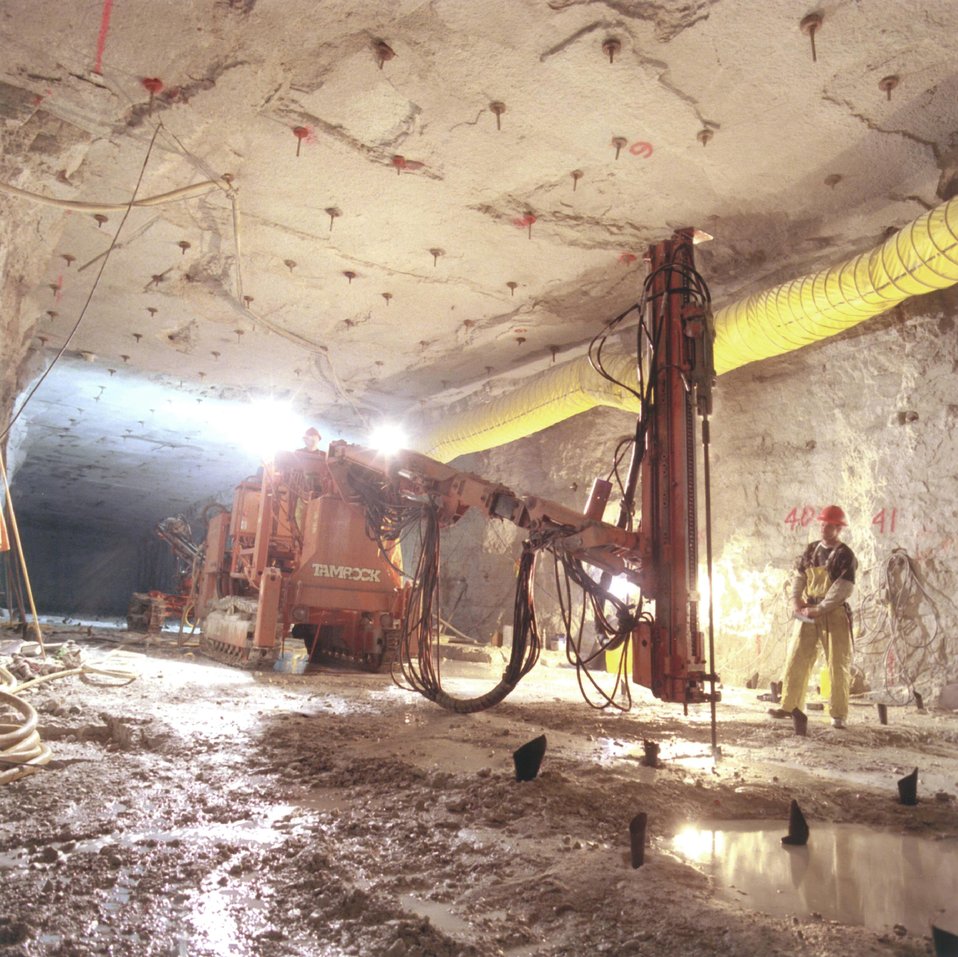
MINERS USE A SPECIAL MACHINE TO DRILL HOLES INTO THE ROCK TO PLACE EXPLOSIVES FOR BLASTING FOR THE NUMI PROJECT, AT FERMI.

SINCE MARCH 2000 AN UNDERGROUND SYSTEMS OF HALLS, SHAFTS AND TUNNELS HAVE BEEN DUG FOR THE NEUTRINOS AT THE MAIN INJECTOR PROJECT. THIS NUMI CONSTRUCTION IS THE FIRST STEP TOWARD BUILDING AN EXPERIMENT AT FERMI THAT WILL DETERMINE WHETHER NEUTRINOS, WHICH ARE GHOST-LIKE PARTICLES TRAVERSING THROUGH THE UNIVERSE AT OR NEAR THE SPEED OF LIGHT, HAVE ANY MASS.